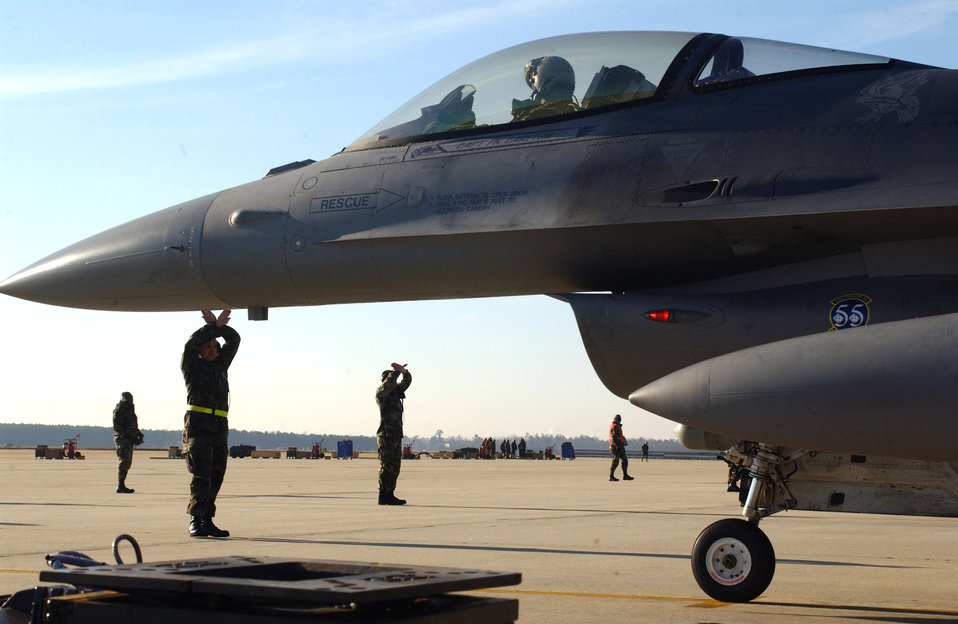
Sea lion 06-07

SHAW AIR FORCE BASE, S.C (AFPN) -- F-16 Fighting Falcons are parked on the ramp after completing their sorties during phase one of Sea Lion 06-07 exercise here Feb. 1. The F-16s are with the 55th Fighter Squadron.